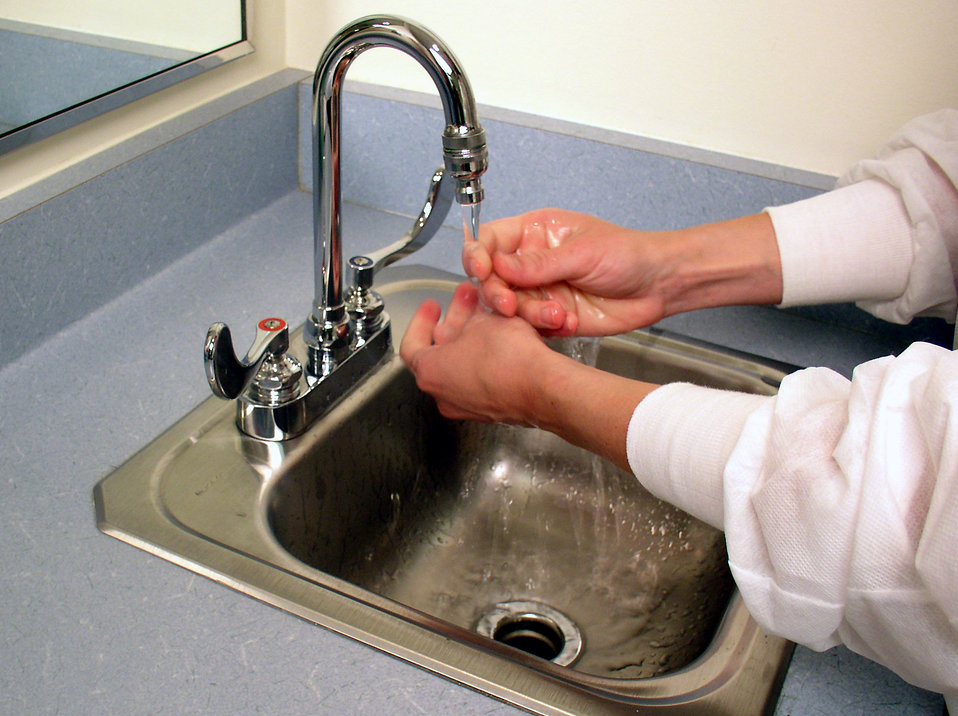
(Image 7 - Hand Washing Procedure) This laboratorian is shown rinsing soap from her hands with warm running water.